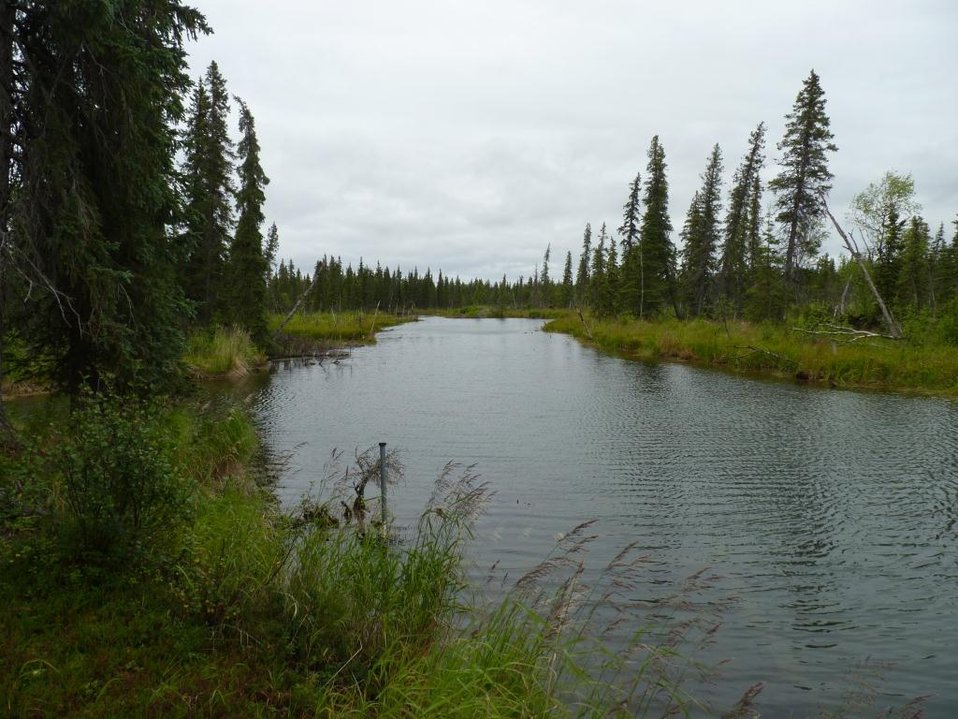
Spruce Vortex site

Spruce Vortex sampling site,
Kwethluk River Salmon Observatory
Kwethluk River, Yukon Delta National Wildlife Refuge

Photo credit: Kristine Sowl
USFWS, Yukon Delta National Wildlife Refuge